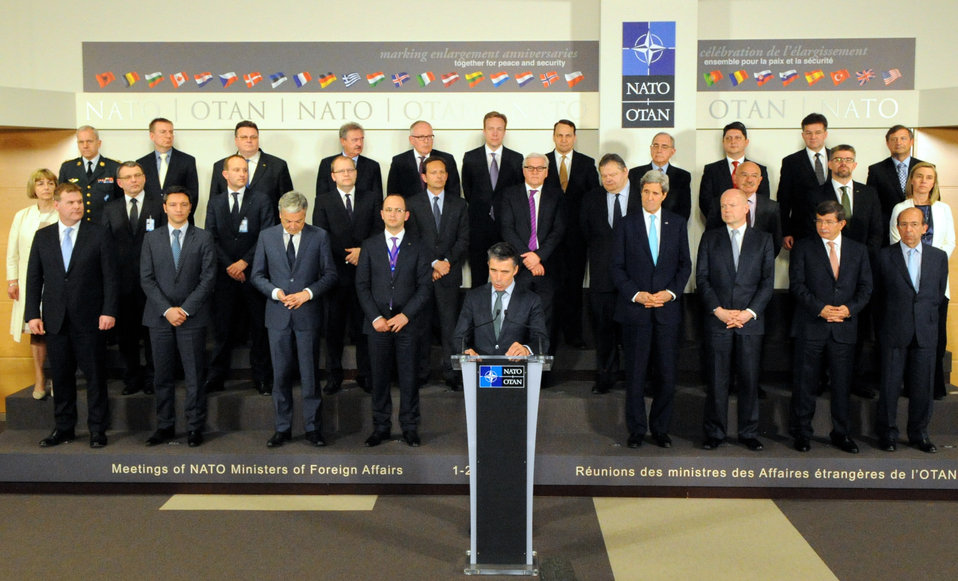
Secretary Kerry, Counterparts Attend NATO Ministerial Meeting in Brussels

U.S. Secretary of State John Kerry and his counterparts at a NATO Ministerial Meeting listen as Secretary General Anders Fogh Rasmussen marks the alliance's enlargement anniversaries during a ceremony at NATO Headquarters in Brussels, Belgium, on April 1, 2014.